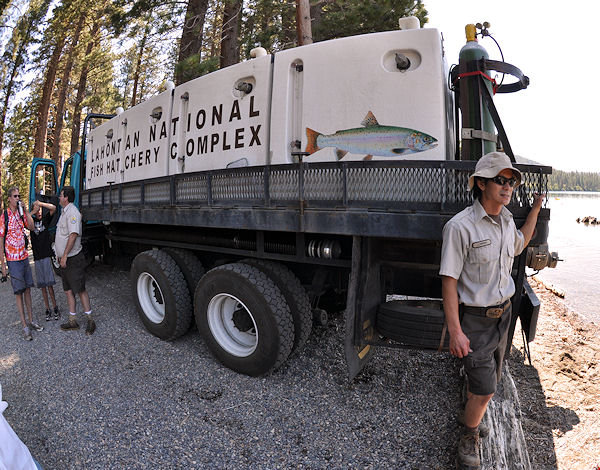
Stocking Fallen Leaf lake with Lahontan cutthroat trout

Stocking more than 8,000 Lahontan cutthroat trout in Fallen Leaf Lake, Tahoe Basin, Calif., September 10, 2010.